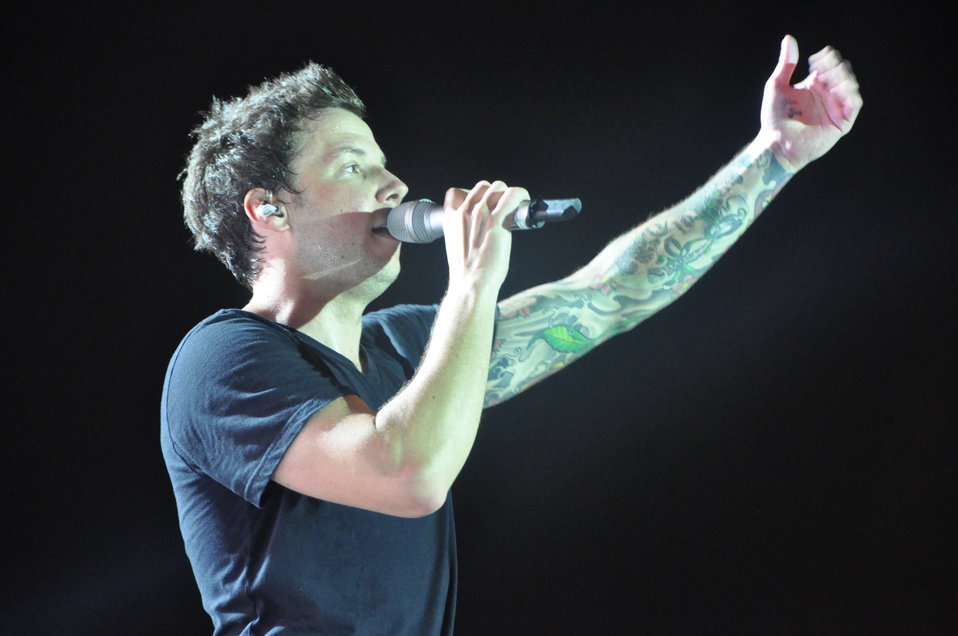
Simple Plan performs at MTV EXIT concert in Hanoi against human trafficking

USAID co-sponsors MTV EXIT concert, campaign against human trafficking